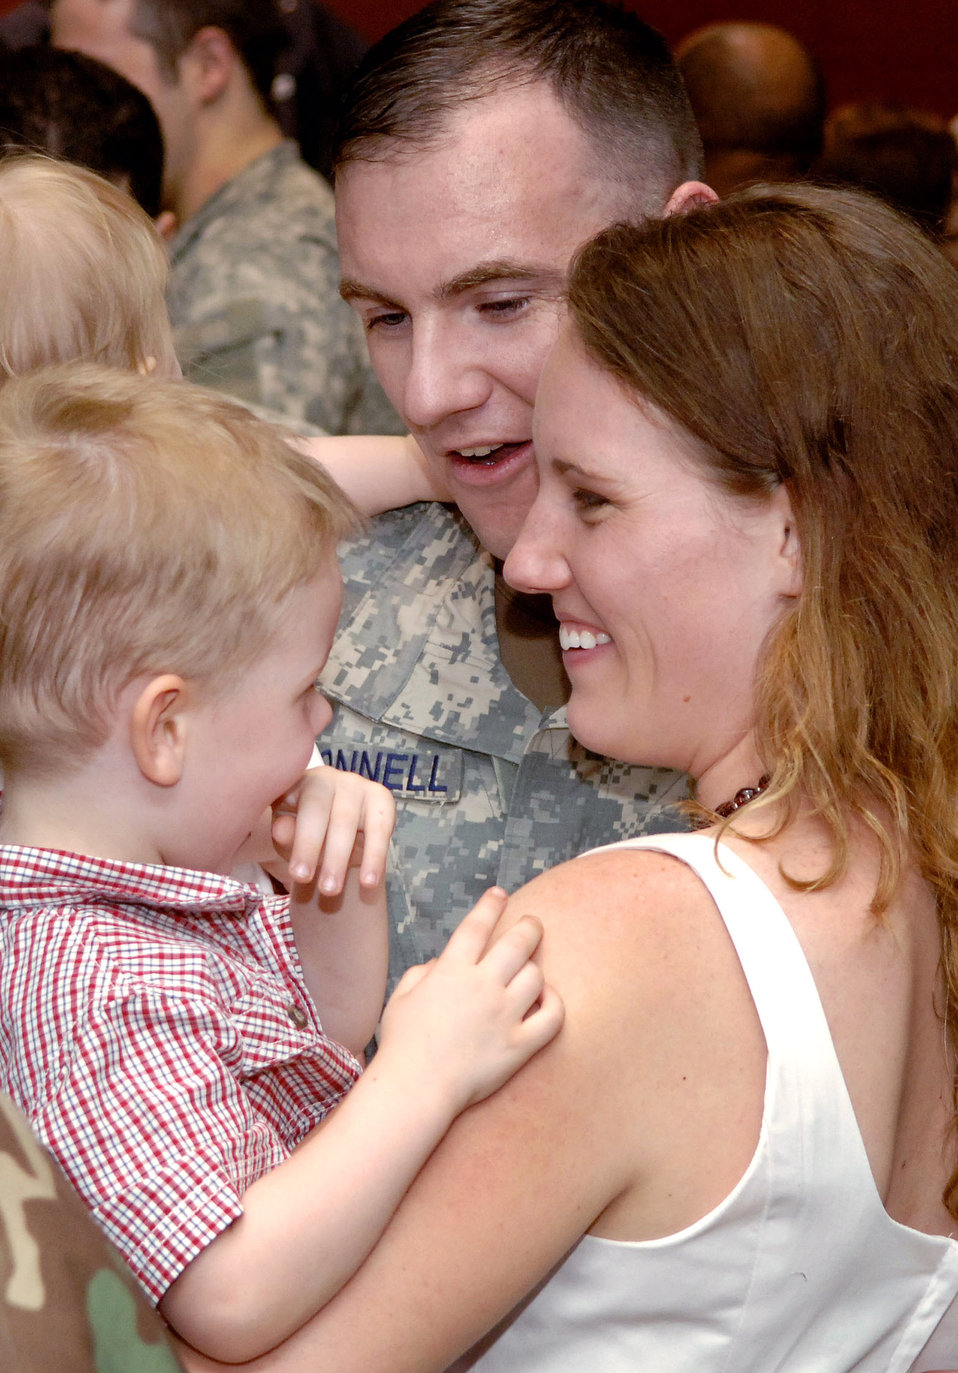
Airmen deployed with Army return home

Capt. Brendan O'Donnell gets a welcome home from his wife, Jennifer, his 2-year-old son, Colin, and 10-month-old daughter, Emma, after returning June 5 to Fort Hood, Texas, following a six-month deployment to Iraq. Captain O'Donnell is one of nearly 90 Airmen from the 3rd Air Support Operations Group who returned back home following a deployment that spread them out across forward operating bases throughout Iraq.